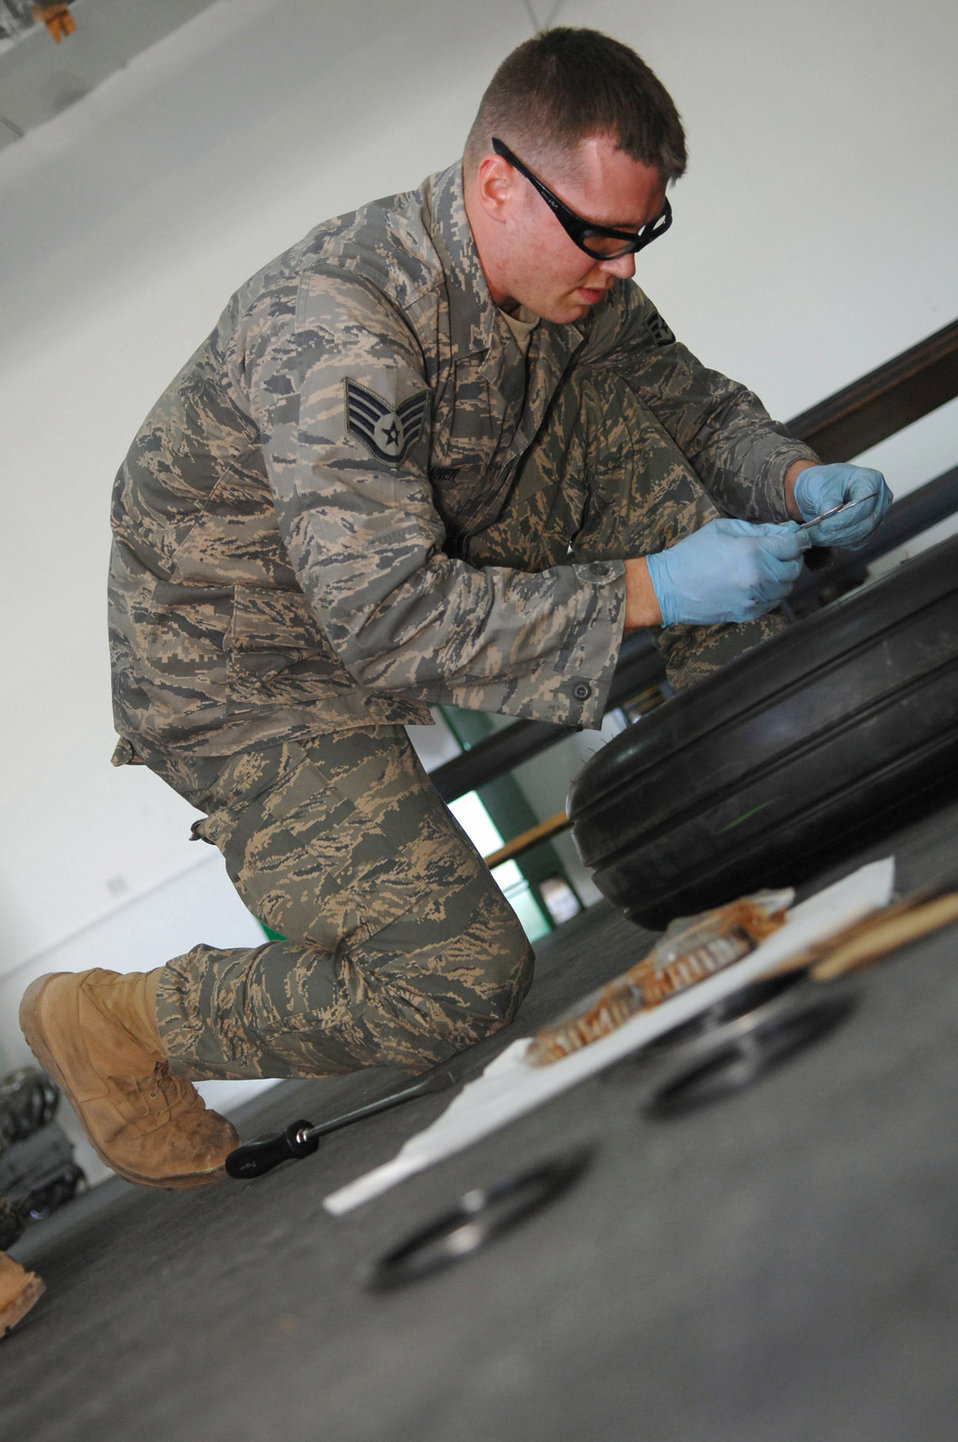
The wheels on the plane

Staff Sgt. Joshua Banner replaces retaining rings on an F-16 Fighting Falcon's main landing gear wheel at Balad Air Base, Iraq. The 332nd Expeditionary Maintenance Squadron provides combat-ready aircraft and munitions to the air component commander in support of coalition forces throughout Iraq. Sergeant Banner is a 332nd EMXS crew chief deployed from Seymour Johnson Air Force Base, N.C.